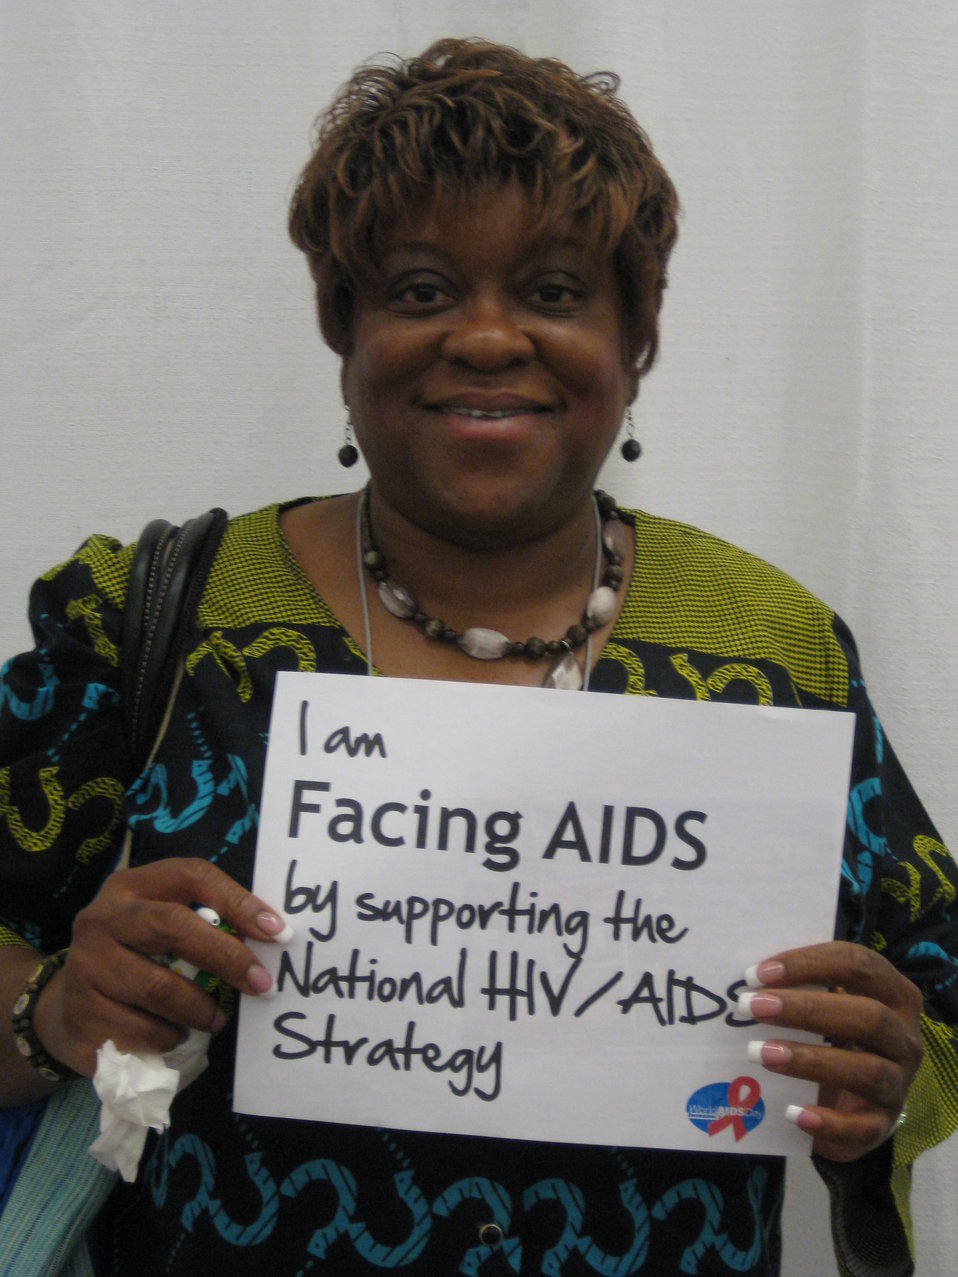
I am FACING AIDS by supporting the National HIV/AIDS Strategy

FACING AIDS at the HIV Prevention Leadership Summit 2010 in Washington, DC.